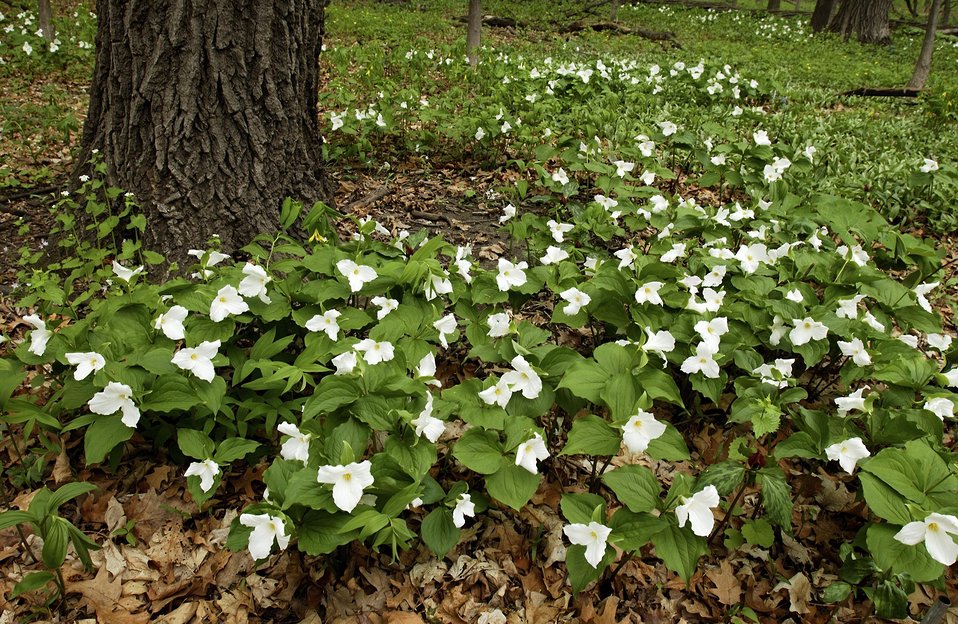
WHITE TRILLIUM WILD FLOWERS IN THE FERMI BIG WOODS.

IN AN EFFORT TO RECOGNIZE AND PRESERVE ITS PRAIRIE HERITAGE, FERMILAB ENCOURAGES NATURAL PRAIRIE LIFE AND VEGETATION. THE FERMI NATIONAL ACCELERATOR LAB ADVANCES THE UNDERSTANDING OF THE FUNDAMENTAL NATURE OF MATTER AND ENERGY BY PROVIDING LEADERSHIP AND RESOURCES FOR QUALIFIED RESEARCHERS TO CONDUCT BASIC RESEARCH AT THE FRONTIERS OF HIGH ENERGY PHYSICS AND RELATED DISCIPLINES.